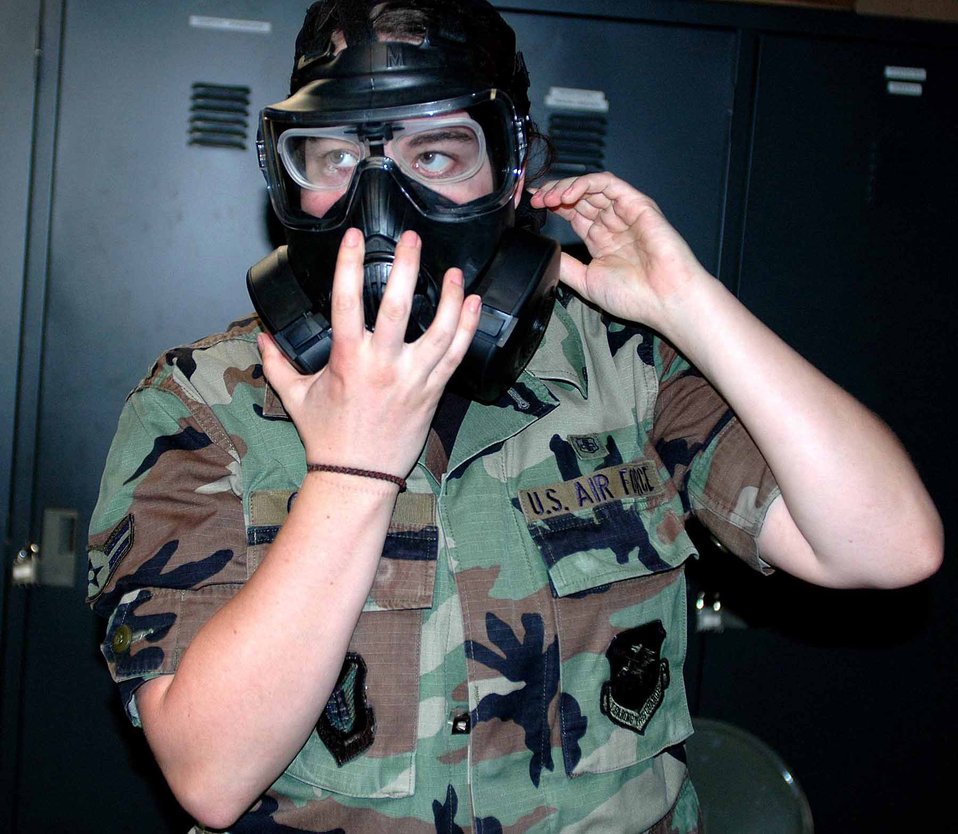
Osan gets technologicaly advanced protective masks

Airman 1st Class Sarah Gaylord dons her new M-50 protective mask during a training class June 9 at Osan Air Base, South Korea. The new mask offers the same level of protection against chemical, biological and radiological threats as the MCU 2, but takes advantage of technological advancements such as a wider view, easier access to the drinking tube and an additional filter. Airman Gaylord is with the 51st Medical Operations Squadron.